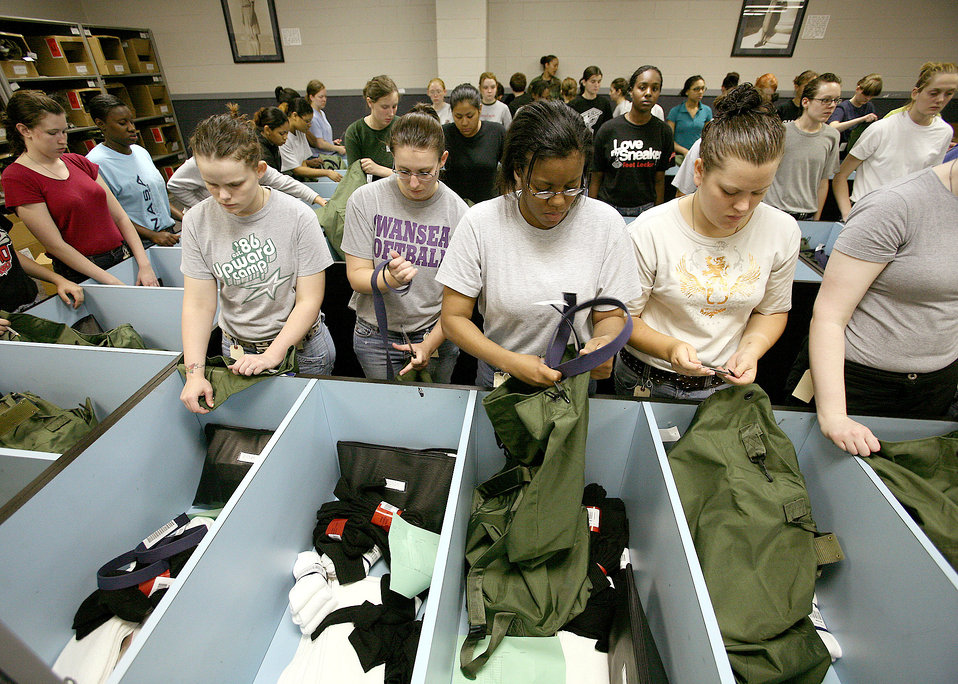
First steps of future Airmen

Air Force basic trainees from the 331st Training Squadron's Flight 392, unload their duffel bags and check their issued items May 2 at Lackland Air Force Base, Texas. The flight's first day of Basic Military Training is May 7. They are scheduled to graduate June 15.